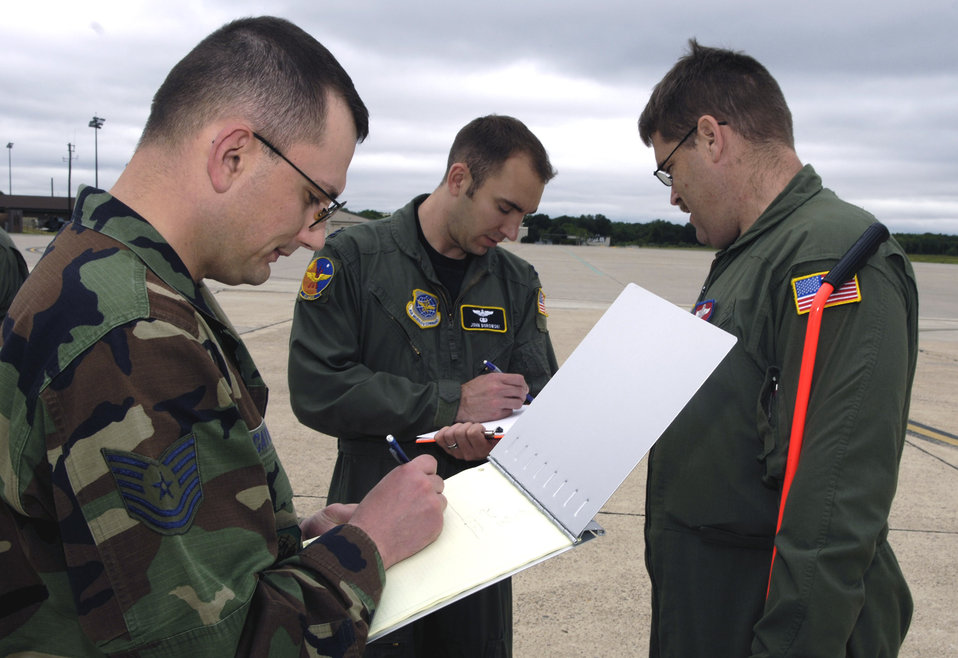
MOBILITY AIR FORCES MOBILE COMMAND AND CONTROL LEADERSHIP COURSE

Students in the Mobility Air Forces Mobile Command and Control Leadership Course record information on the flightline at McGuire Air Force Base, N.J., during an airfield survey exercise June 4.